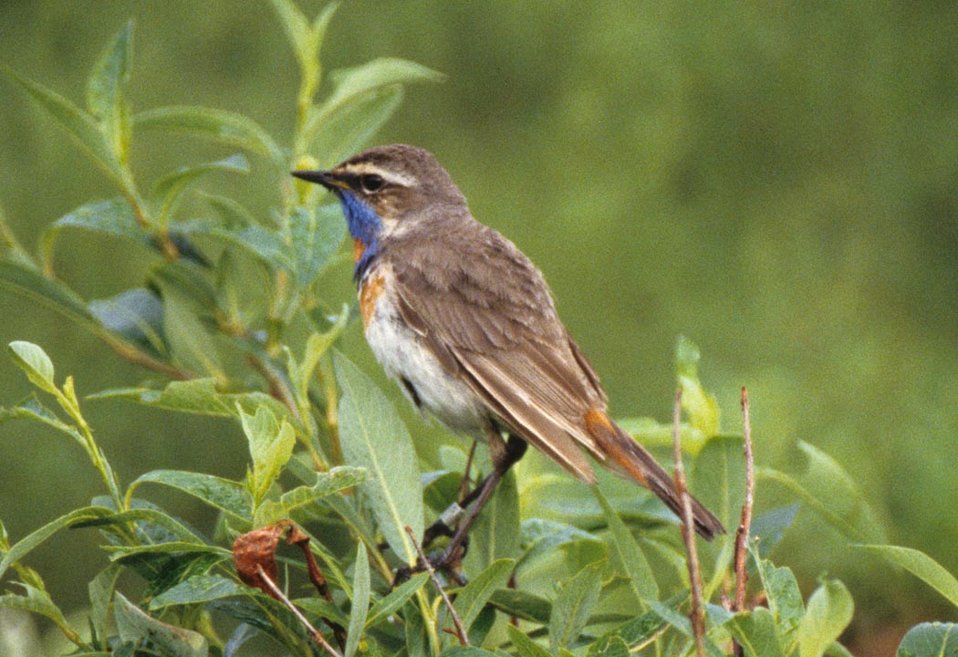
Bluethroat male

The Bluethroat is one of the smallest members of the Thrush family measuring 5.5 (14 cm) inches in length. The colorful blue throat pattern distinguishes this breeding male from other species. Nests are found on the tundra in thickets near water. The Blue